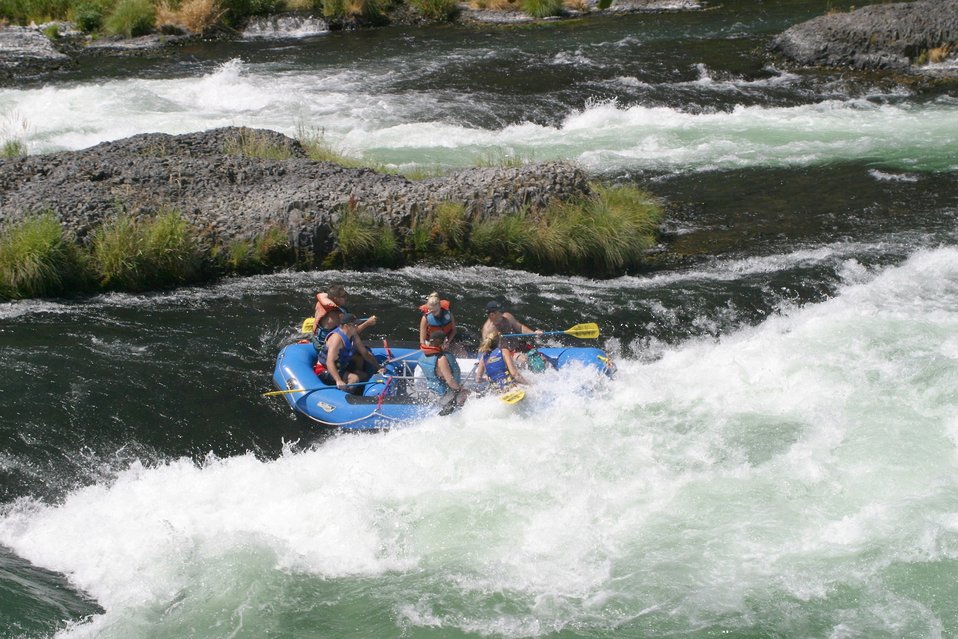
Oak Springs is a Class IV Rapids. The left channel has shallow rocks, large standing waves, turbulent currents and a large hole during high flows. The right channel has a large hole, shallow rocks, and turbulent currents. 7/26/03 Pelton Dam 3600 cfs: Moody Rapids 4300 cfs.